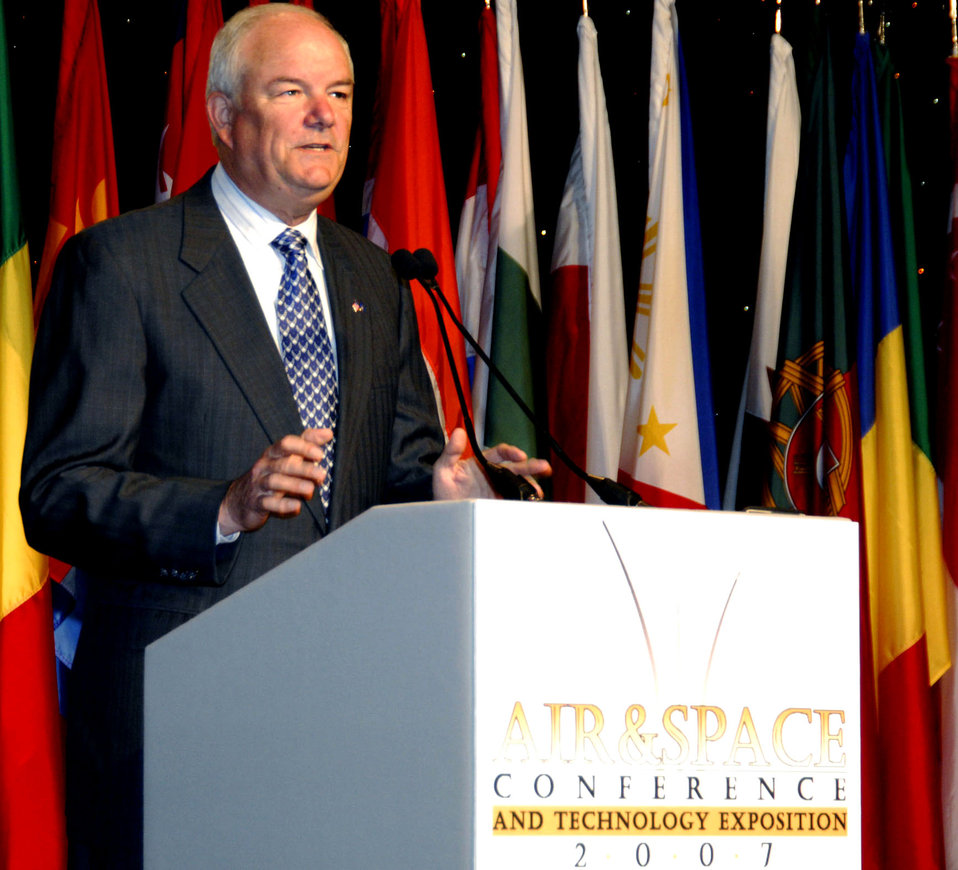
SECAF addresses Air Force Association conference

Secretary of the Air Force Michael W. Wynne addressed various issues facing today's Airmen and focused on the air, space and cyberspace domains during his remarks Sept. 24 at the Air Force Association's Air & Space Conference and Technology Exposition in Washington.